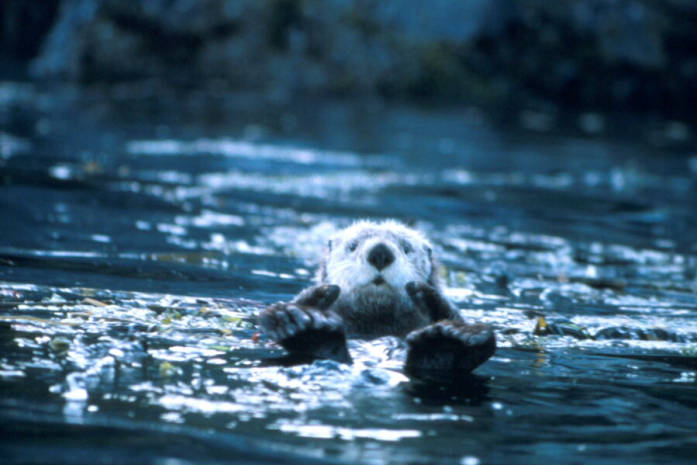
sea otter